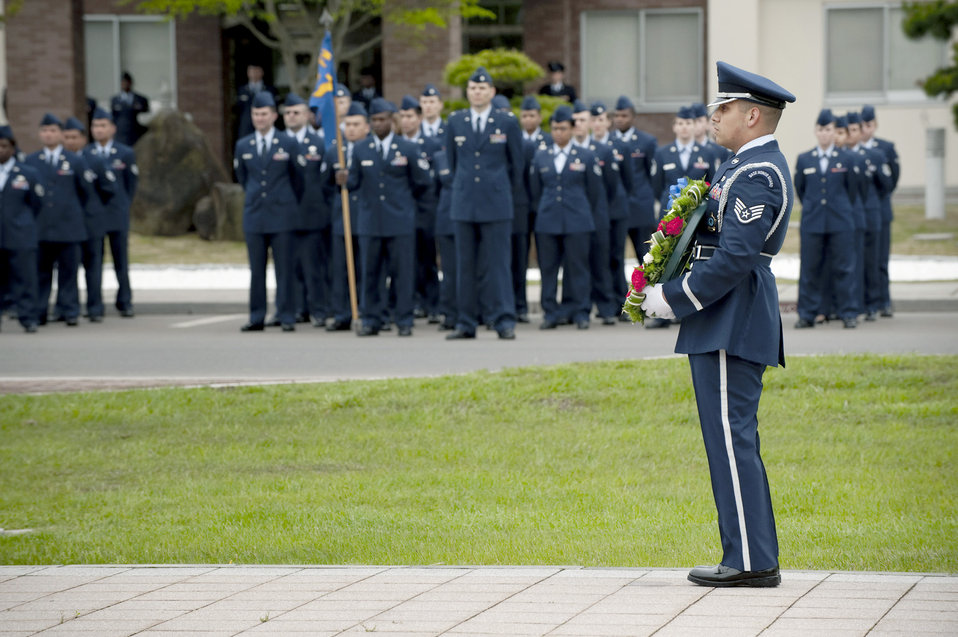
Misawa remembers the

Staff Sgt. Felipe Viesca stands holding a wreath during a Memorial Day retreat ceremony May 27, 2010, at Misawa Air Base, Japan. Active duty and retired military members from across the base stood in formation to remember fallen servicemembers. Sergeant Viesca is a member of the Misawa Air Base honor guard.